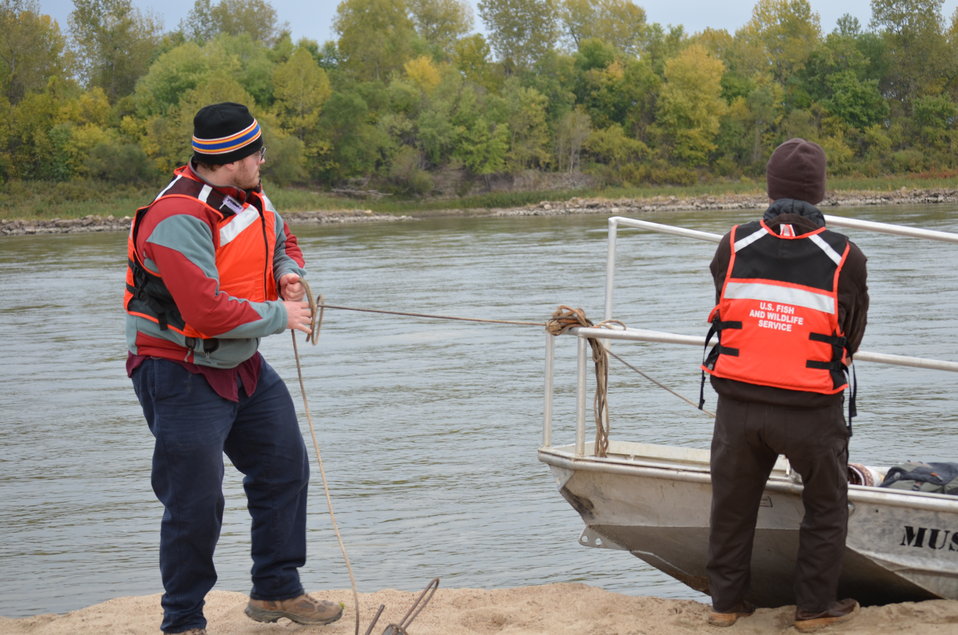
Anchoring down

(Left) Peace Corps Fellow and USFWS Volunteer Aaron Groth assists USFWS Project Leader Tracy Hill set anchor. USFWS/Ashley Spratt